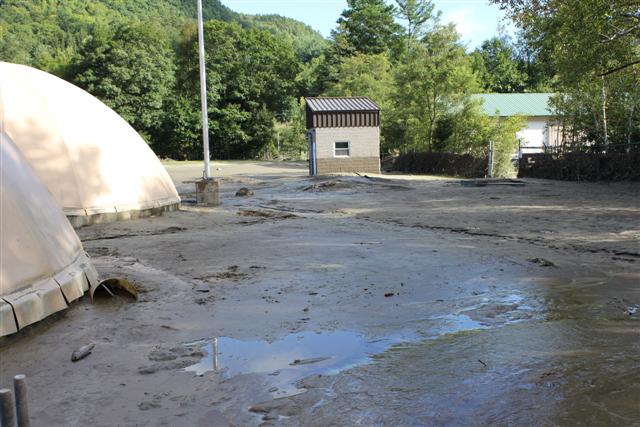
Damage at White River National Fish Hatchery

Damage and flooding at the White River National Fish Hatchery in Bethel, VT. after Hurricane Irene came through on Sunday, August 28, 2011.